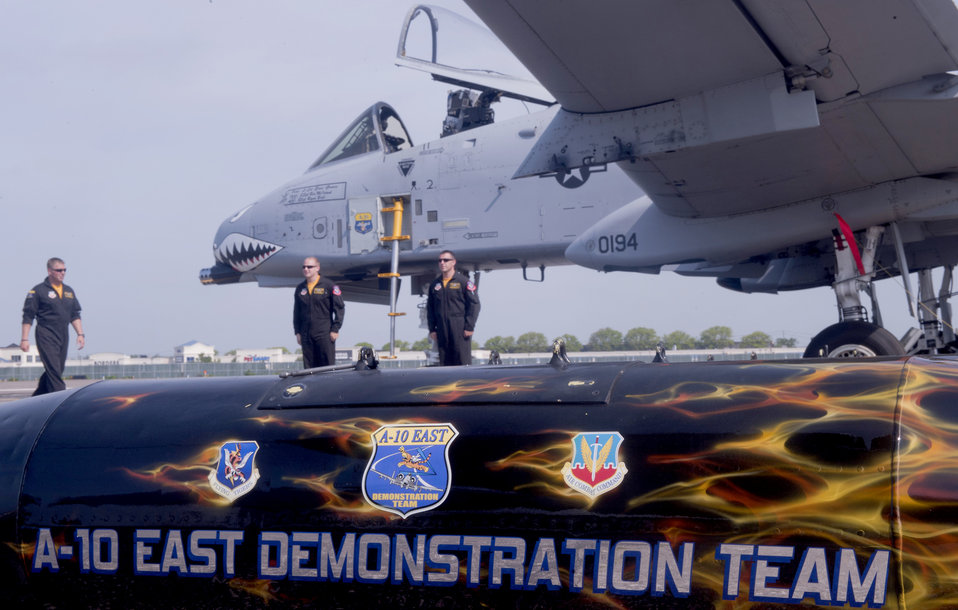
A-10 East Demonstration Team

Members of the A-10 East Demonstration Team support crew conduct a preflight demonstration May 28, 2011, before an air show at Jones Beach, N.Y.